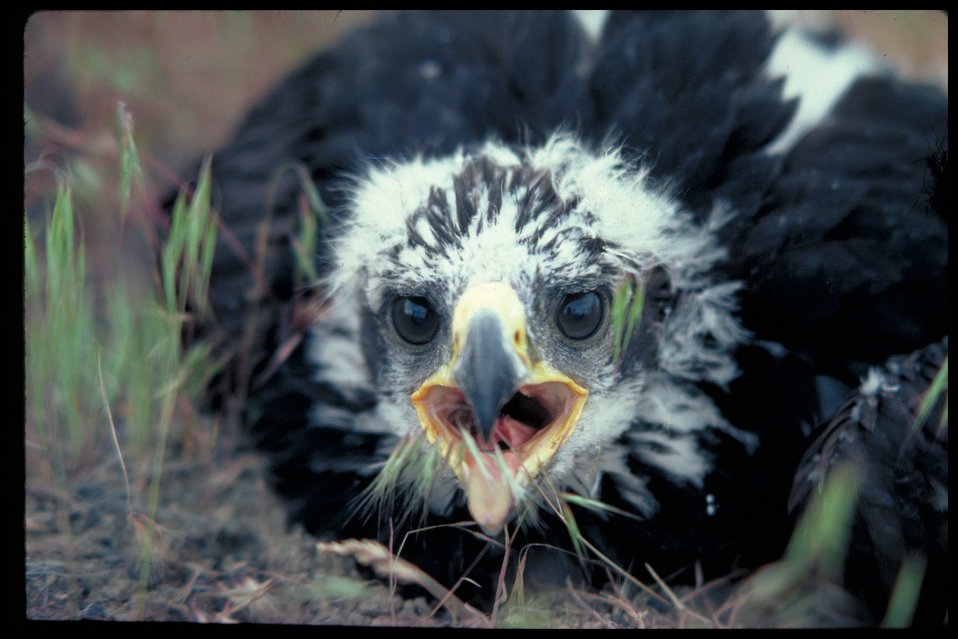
Ferrugenous Hawk Birds of Prey National Conservation Area BOP Owyhee Field Office LSRD Lower Snake River District